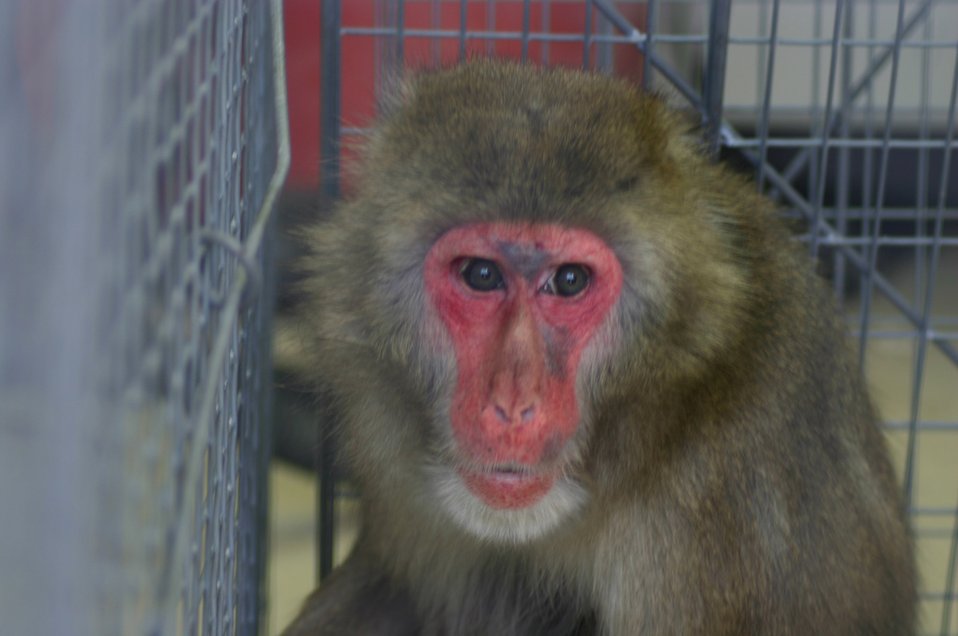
Don't monkey around with the Air Force

Maggie, a Japanese snow monkey, hangs out in a trap set for her in late January on Seymour Johnson Air Force Base, N.C. The exotic primate escaped her owner in December more than 15 miles from the base and was finally captured when she came on base without authorization during the active duty's Operational Readiness Inspection. Reservists from the 916th Air Refueling Wing were instrumental in her capture.